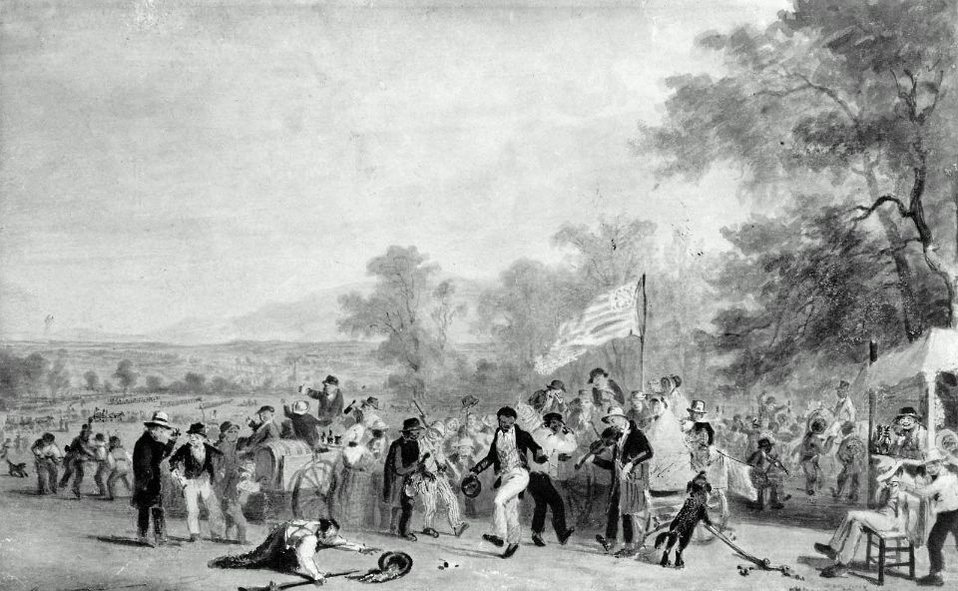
James Goodwyn Clonney - Study for ‚Militia Training‘